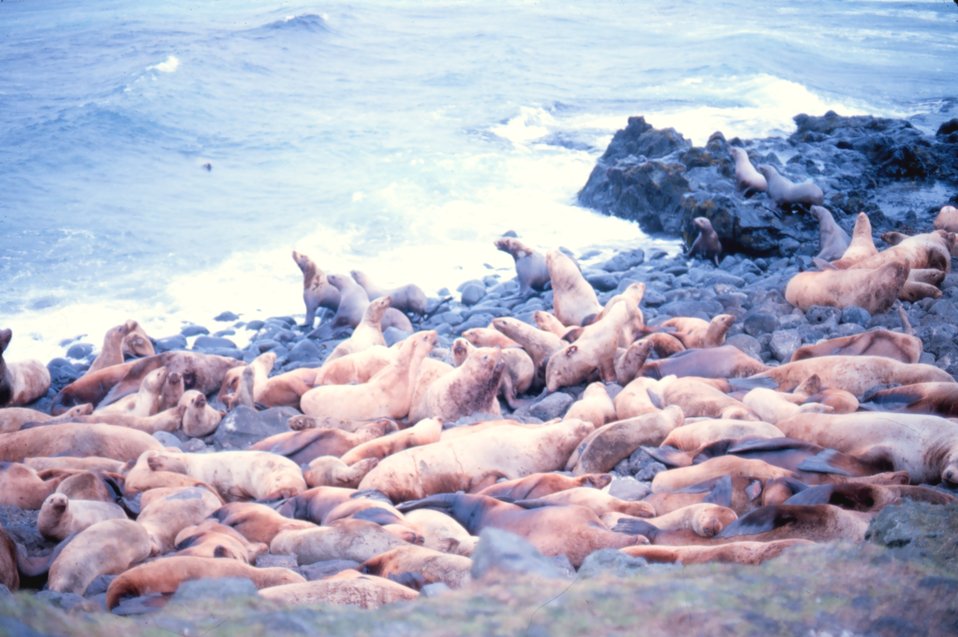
Steller sea lion - Eumetopias jubatus.